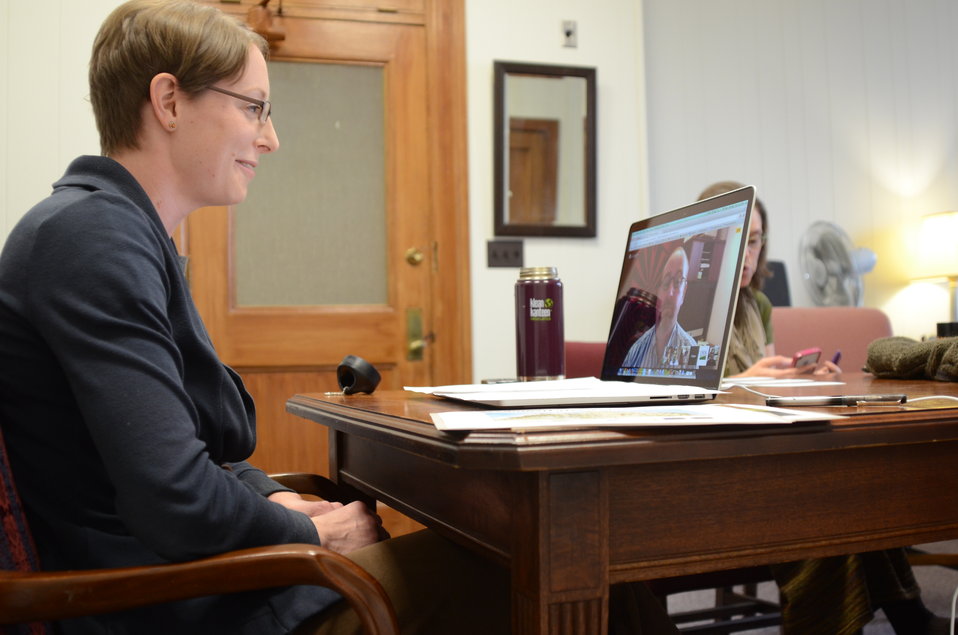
U.S. Department of Agriculture (USDA) National Coordinator for Local and Regional Food Systems Elanor Starmer leads a live Google Hangout to discuss the importance of a comprehensive Food, Farm and Jobs Bill to local and regional food systems at USDA on Thursday, Nov. 21, 2013.